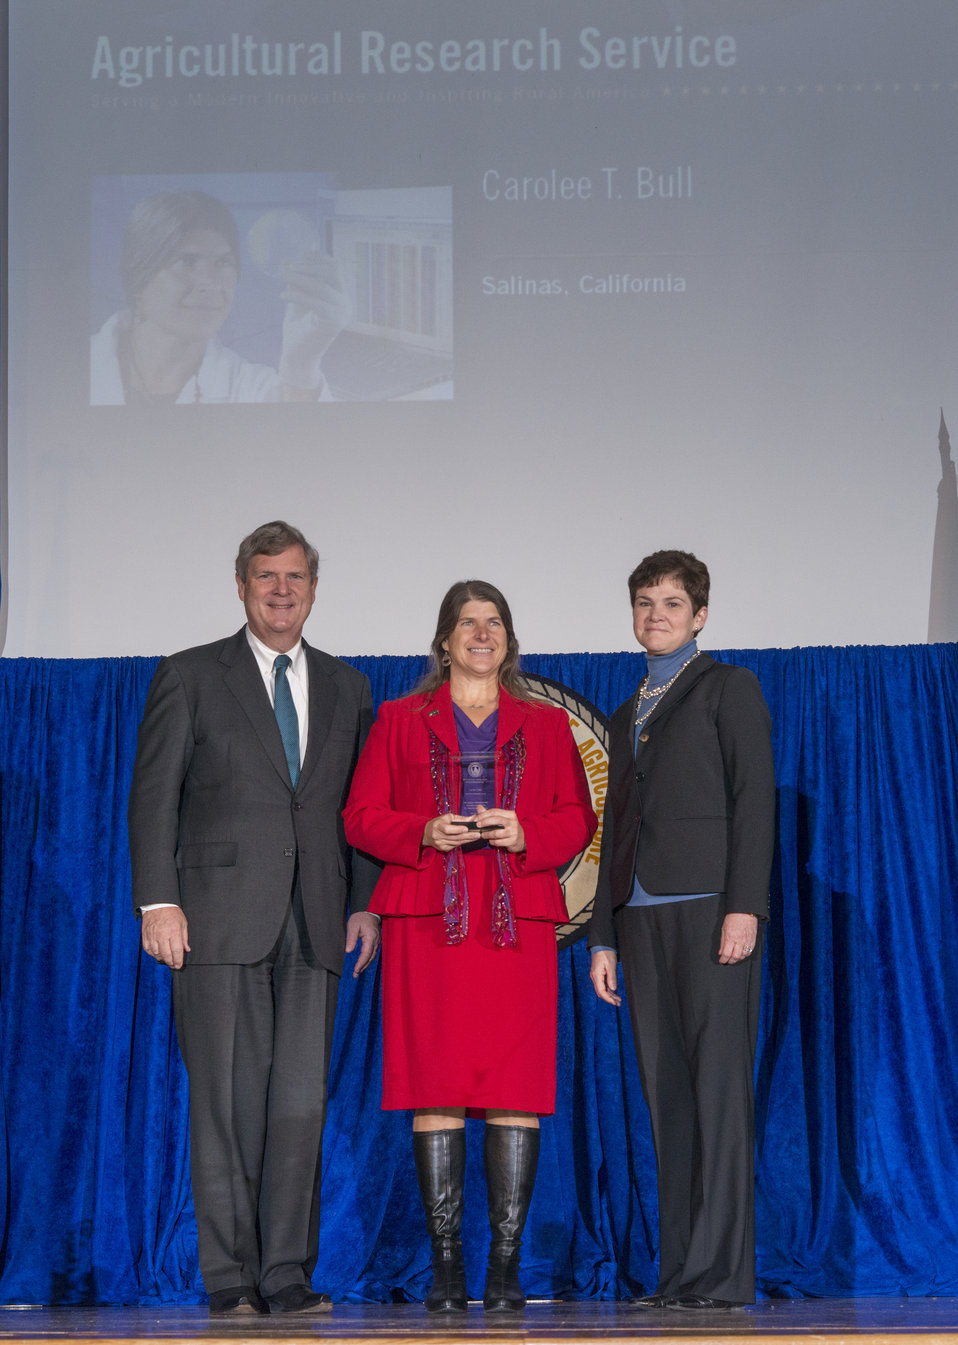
Agriculture Secretary Tom Vilsack and Agriculture Deputy Secretary Krysta Harden present the Secretary’s Honor Award to Agricultural Research Service (ARS) in Salinas, CA Carolee T. Bull for innovative program development and outstanding mentoring, priming the workforce pipeline with minority and women undergraduate researchers in the Salinas Valley of California at the 2013 Secretary's Honor Awards in the Jefferson Auditorium at the U.S. Department of Agriculture (USDA) in Washington, D.C. on Wednesday, Dec. 11, 2013.